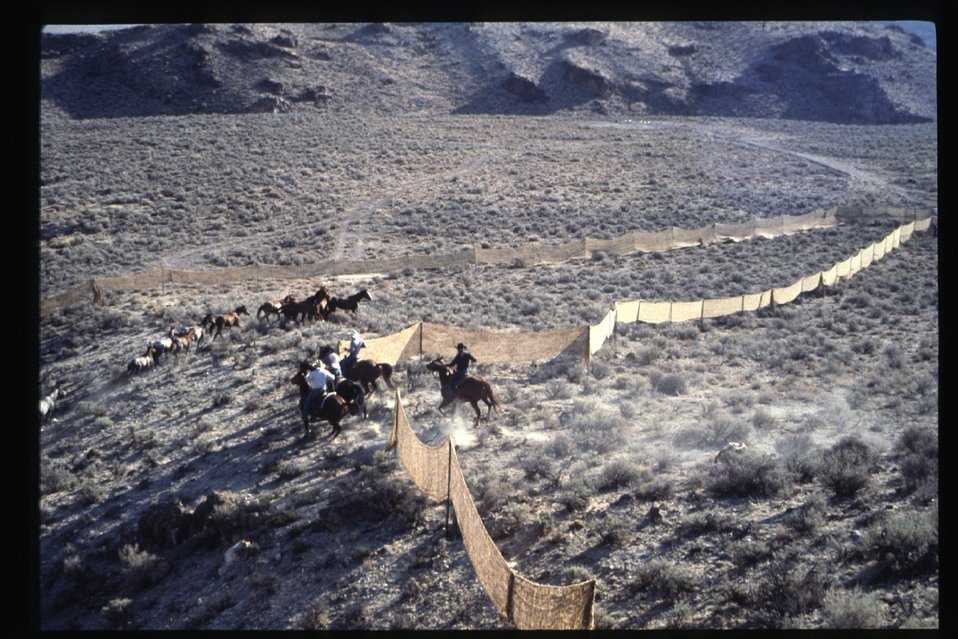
Wild horse and burro Corral roundup WHB LSRD Lower Snake River District